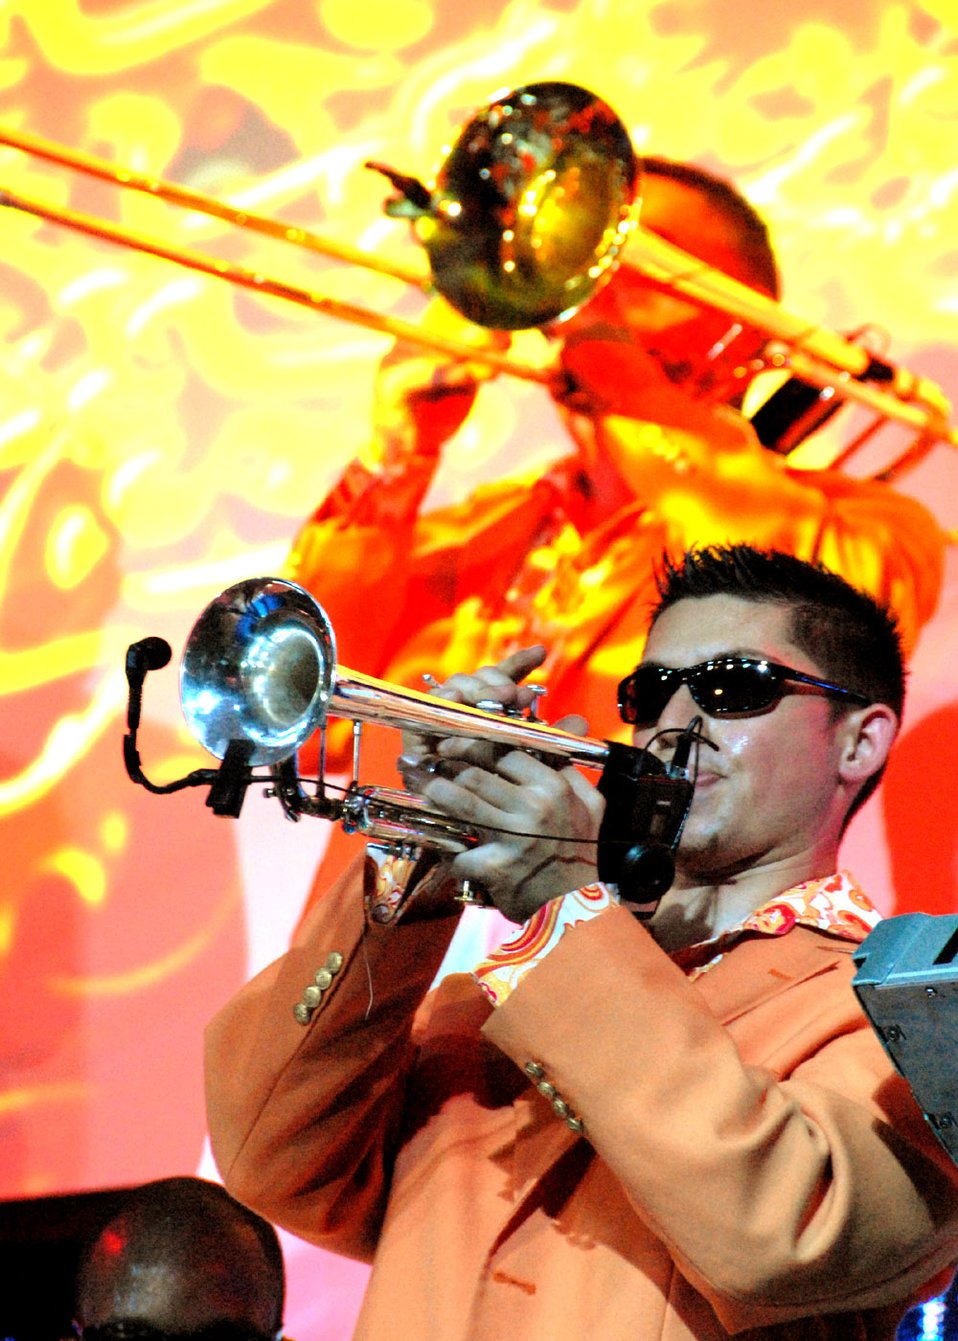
Tops In Blue performs at Osan

Senior Airman James Rannalli performs during Tops in Blue's annual world tour celebrating